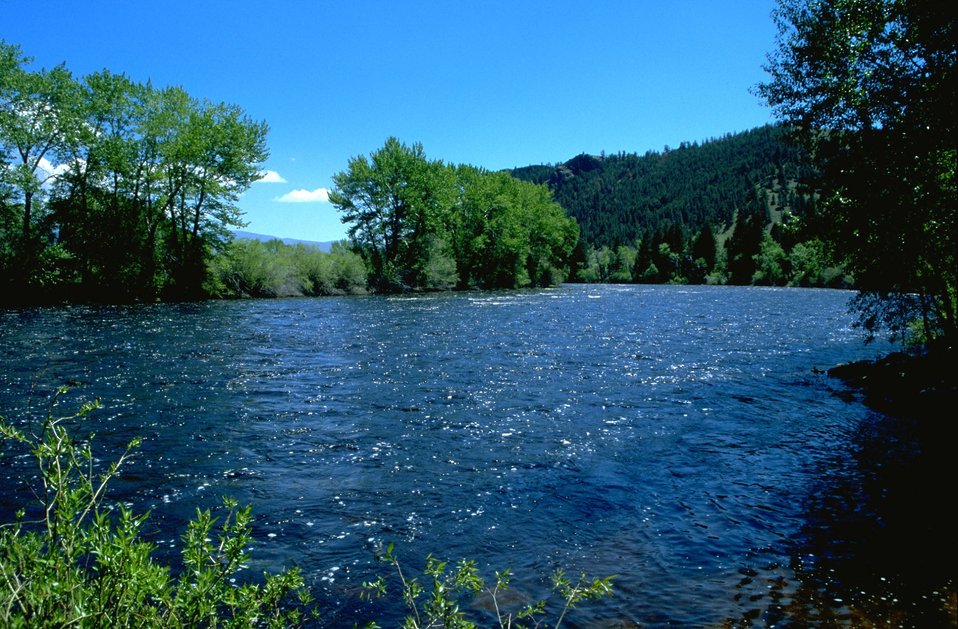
Scenic view of the Big Hole River